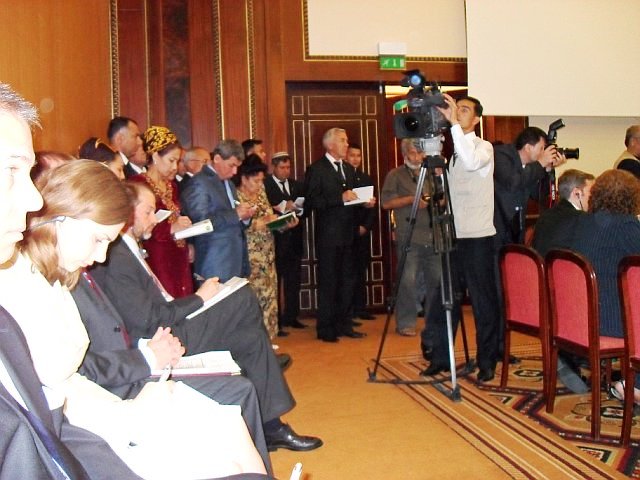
Members of the Press Take Notes at First Annual Bilateral Consultations Between Turkmenistan and the United States

Members of the press take notes during the first Annual Bilateral Consultations Between Turkmenistan and the United States in Ashgabat on June 16, 2010. The U.S. delegation was led by U.S. Assistant Secretary of State for South and Central Asian Affairs Robert O. Blake, who was accompanied by U.S. Assistant Secretary for Democracy, Human Rights and Labor Michael Posner and Director for Central Asia at the National Security Council, Kurt Donnelly.